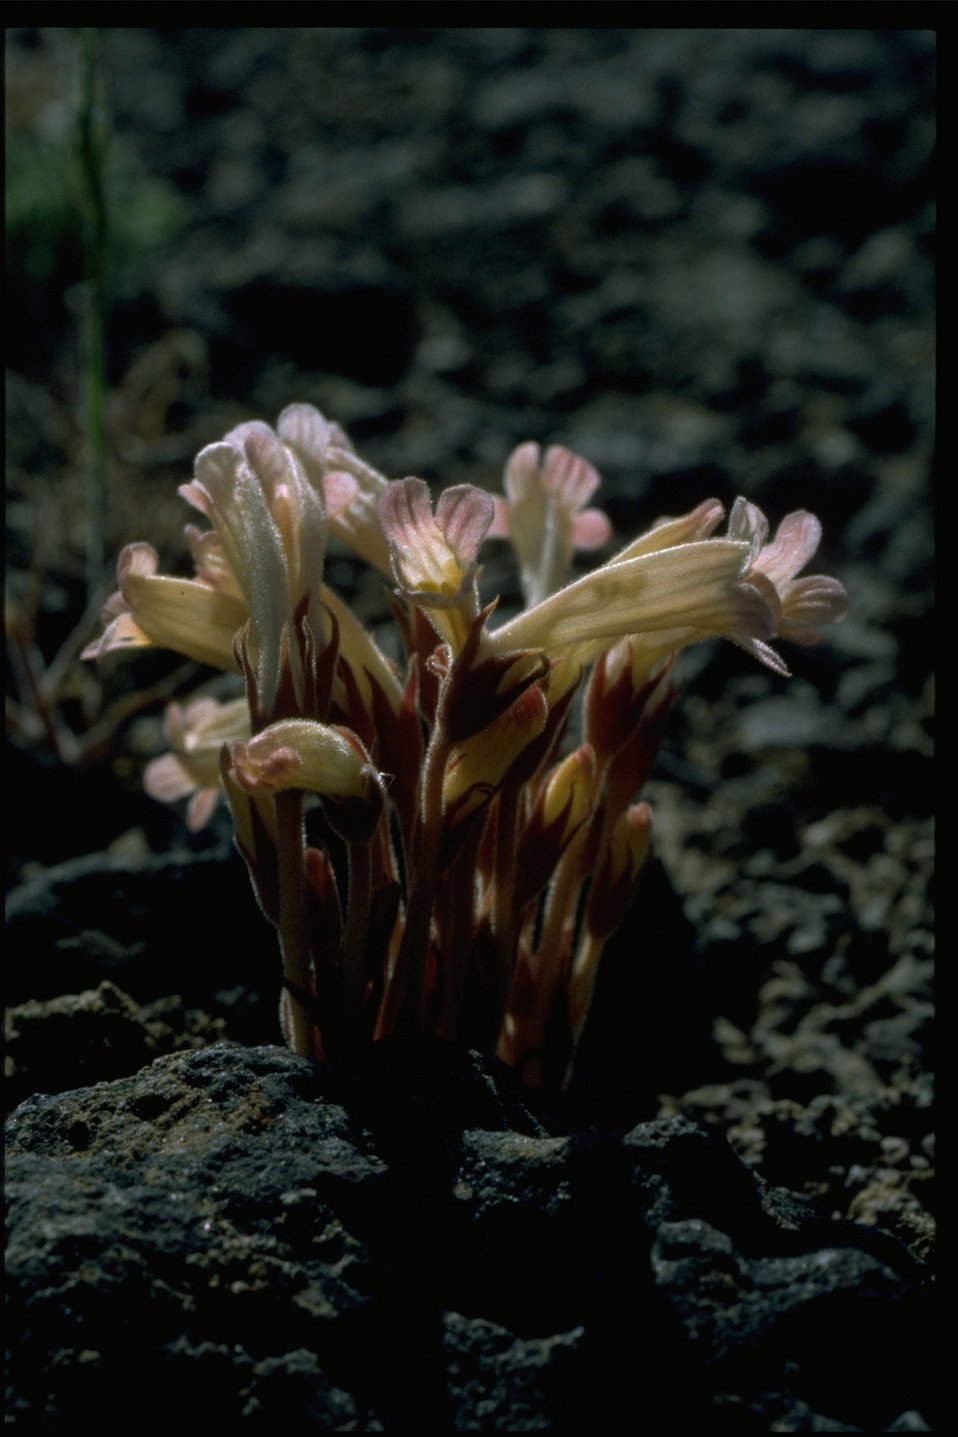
Closeup shot of clustered broomrape (Orobanche fasciculata).